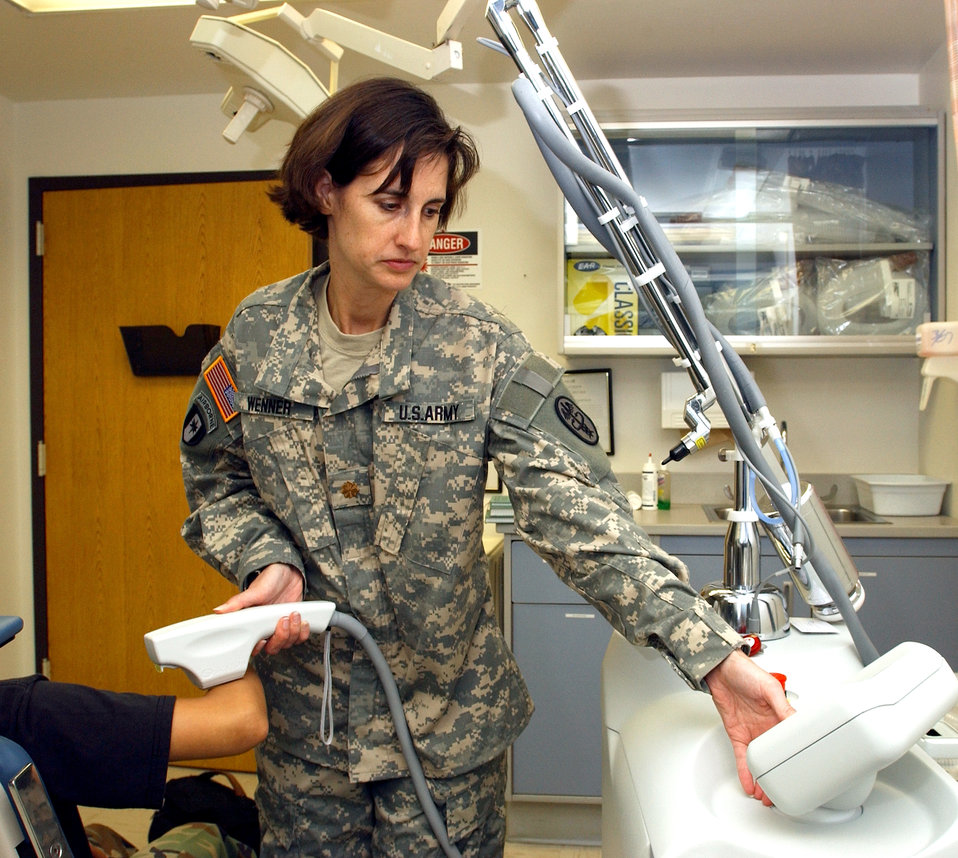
Maximum accreditation awarded to joint dermatology program

Army Maj. Kimberly Wenner uses a Sciton Laser to remove severe scarring while working in the 59th Medical Wing's dermatology clinic at Lackland Air Force Base, Texas, Aug. 27. Major Wenner is a second-year dermatology resident assigned to the 59th Medical Wing.